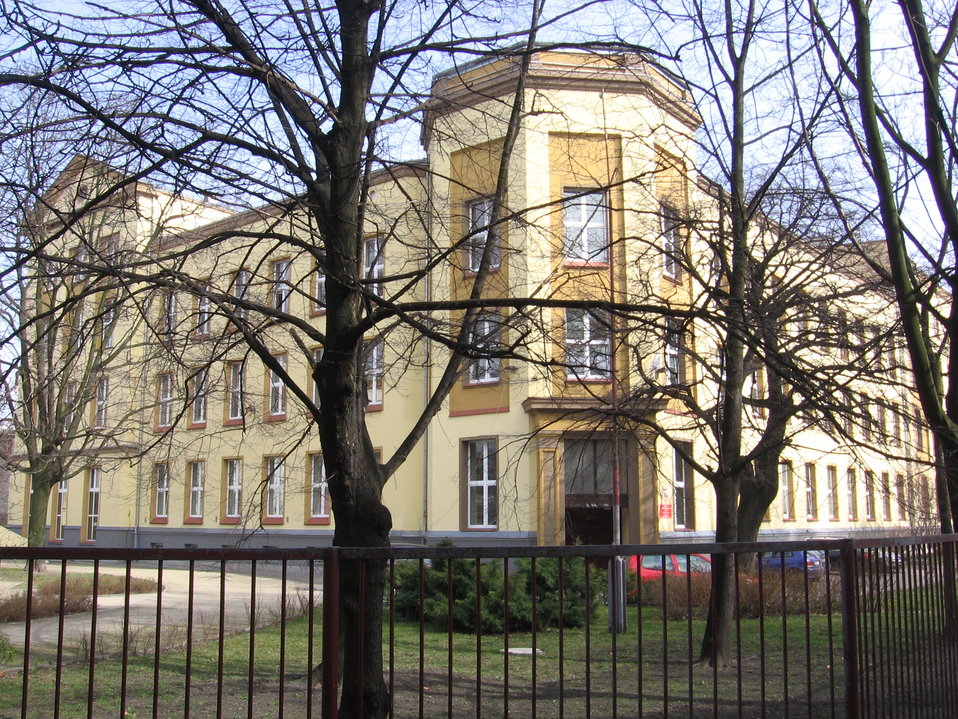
C. J. Ch. Zimmermann, Catholic and Protestant secondary school in Wroclaw, 1865, later altered. View from south west.